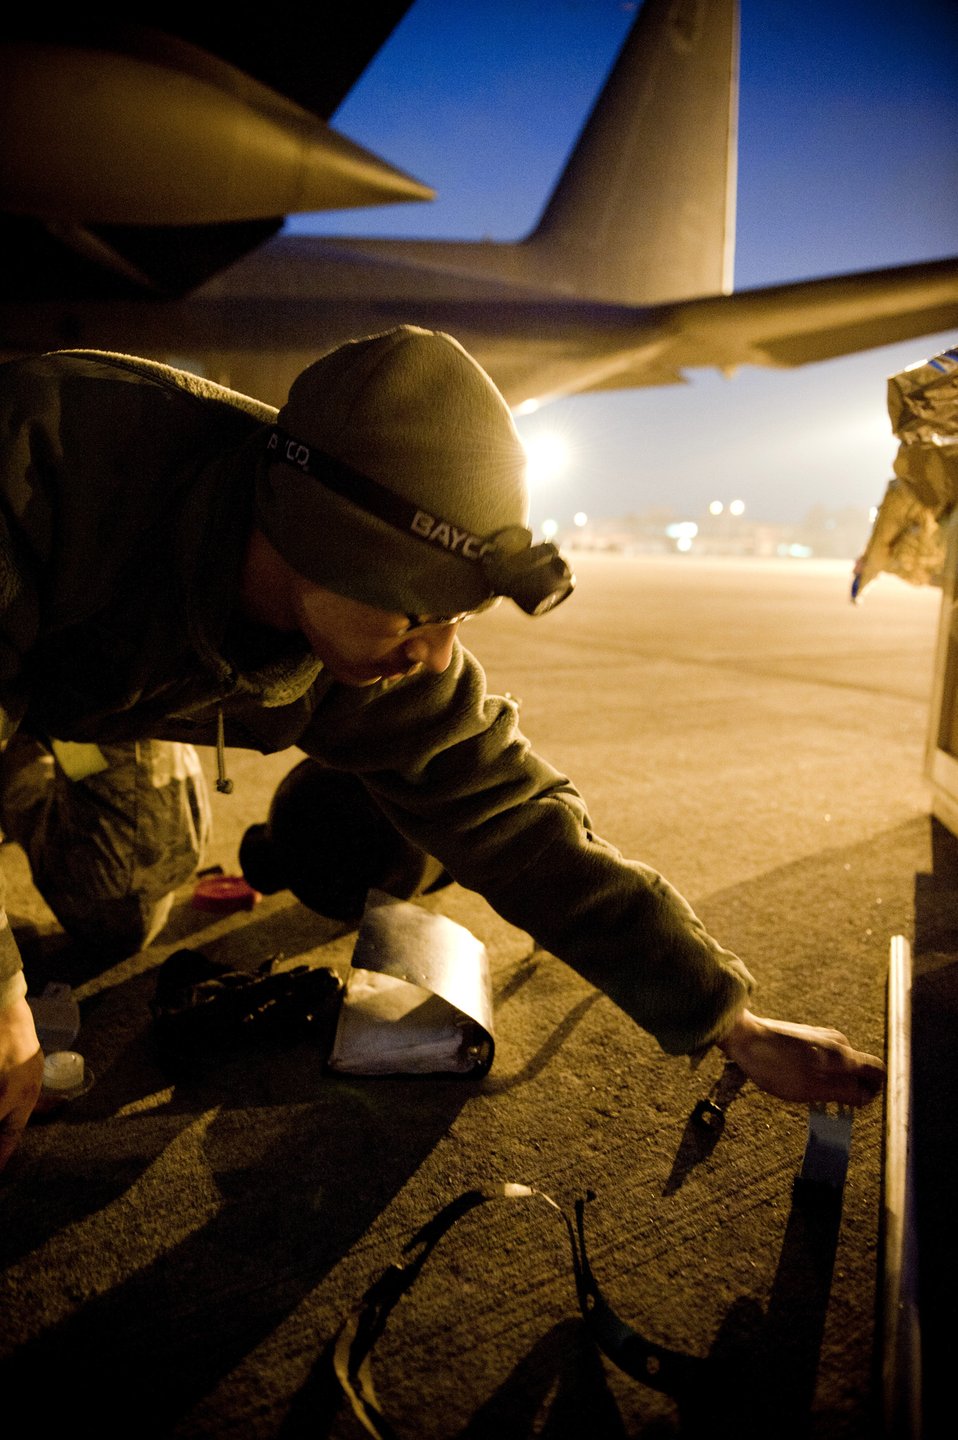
The Air Force never sleeps

Senior Airman John Pura works through the night performing maintenance on an MC-130P Combat Shadow March 31, 2011, at Yokota Air Base, Japan, in support of Operation Tomodachi. Airman Pura is assigned to the 353rd Special Operations Maintenance Squadron at Kadena Air Base, Japan.